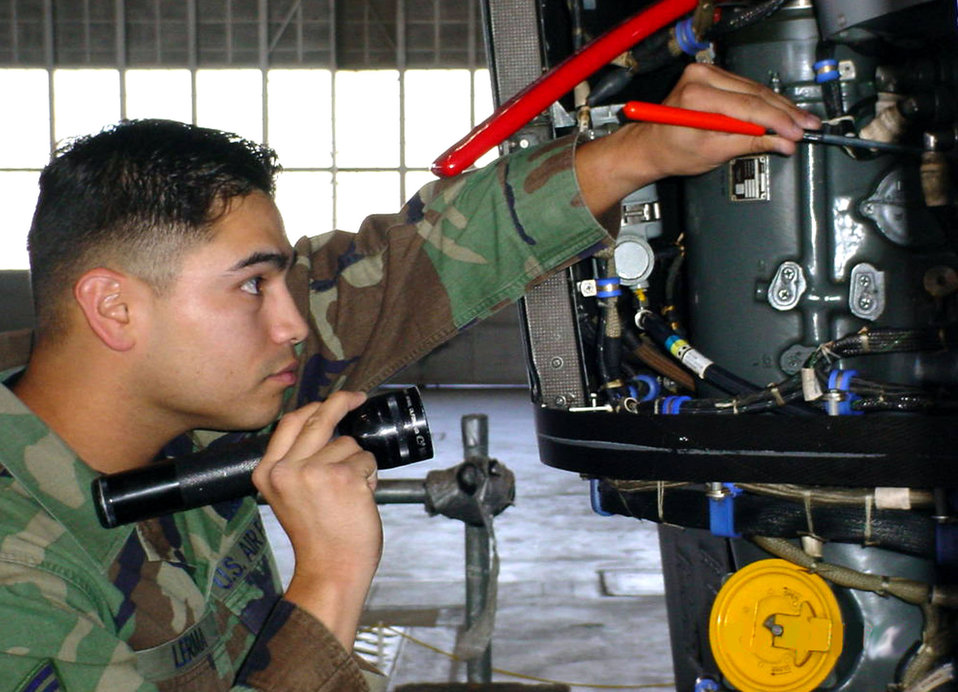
Spirit of Hope

EDWARDS AIR FORCE BASE, Calif. (AFPN) -- Staff Sgt. Jason Lerma inspects a component on the CV-22 Osprey. Sergeant Lerma is this year's recipient of the United Service Organizations' Spirit of Hope Medallion Award. The award is given to a junior enlisted Airman who embodies the values of the men and women of the armed forces. He is a CV-22 integrated test team systems verification manager here.